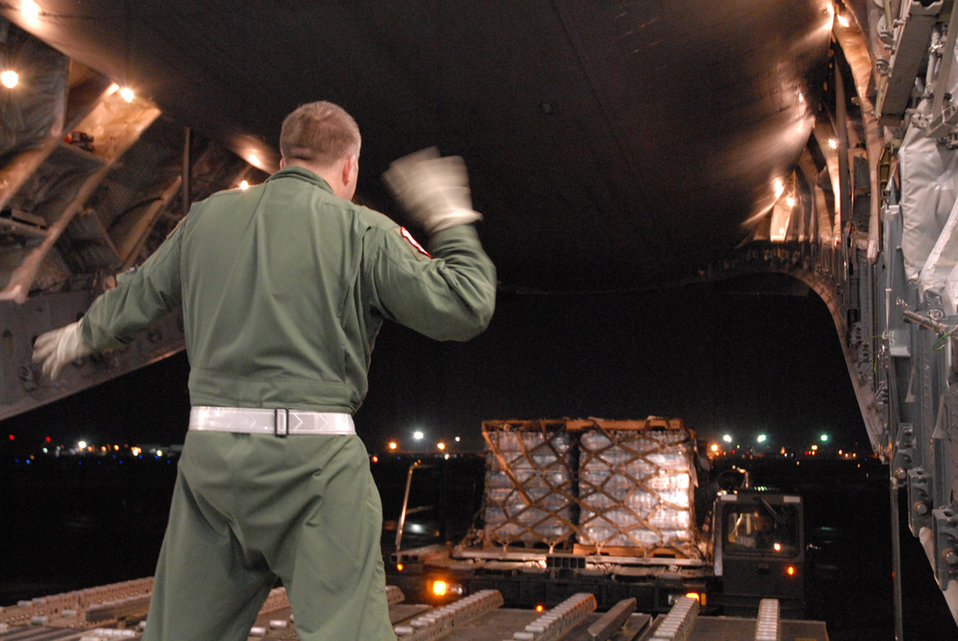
517th Airlift Squardron supports relief efforts in Japan

Joint Base Elmendorf-Richardson, Alaska -- Air Force Staff Sgt. Adam Koerner, 517th Airlift Squadron loadmaster, Joint Base Elmendorf-Richardson, Alaska, directs supplies into a C-17 Globemaster III for humanitarian relief, destined for Misawa Air Base Japan.